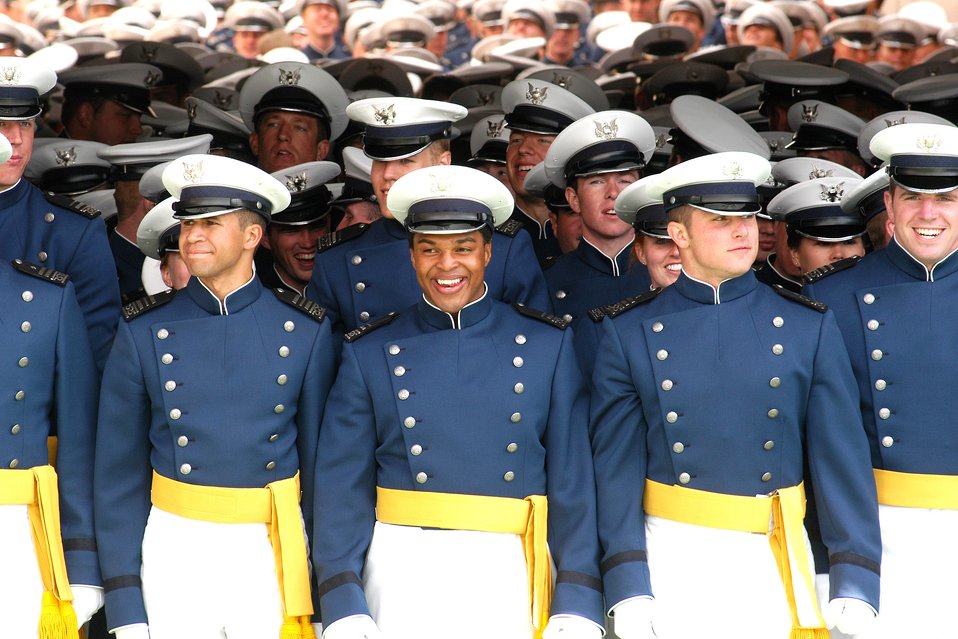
Rumsfeld voices confidence in academy graduating class

Members of the Class of 2006 prepare to march into Falcon Stadium to begin the U.S. Air Force Academy graduation ceremony in Colorado Springs, Colo., on Wednesday, May 31, 2006. Secretary of Defense Donald H. Rumsfeld was the guest speaker at the commencement. The 879 graduates of the class of 2006 incur a five-year active duty service commitment.